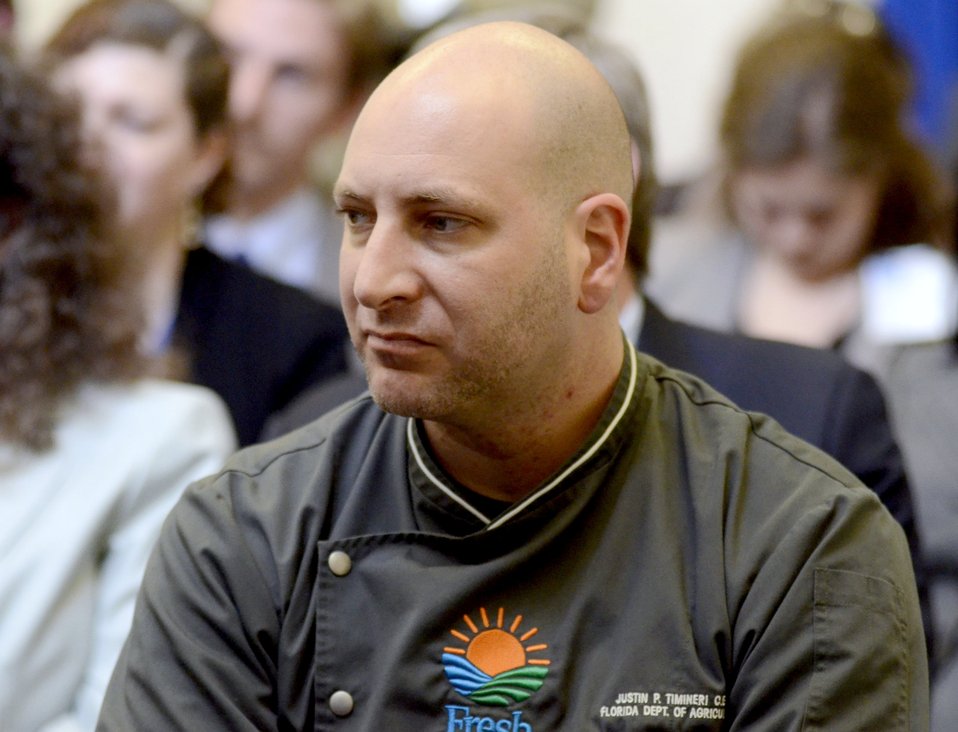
State of Florida chef Justin Timineri, attended the Know Your Farmer Compass event that utilized twitter social media to continue the National Conversation on Local and Regional Food projects and how they offer economic opportunities to local farmers, ranchers and food entrepreneurs. The virtual conversation took place from the White House, in Washington, D.C., on Monday, March 5, 2012.